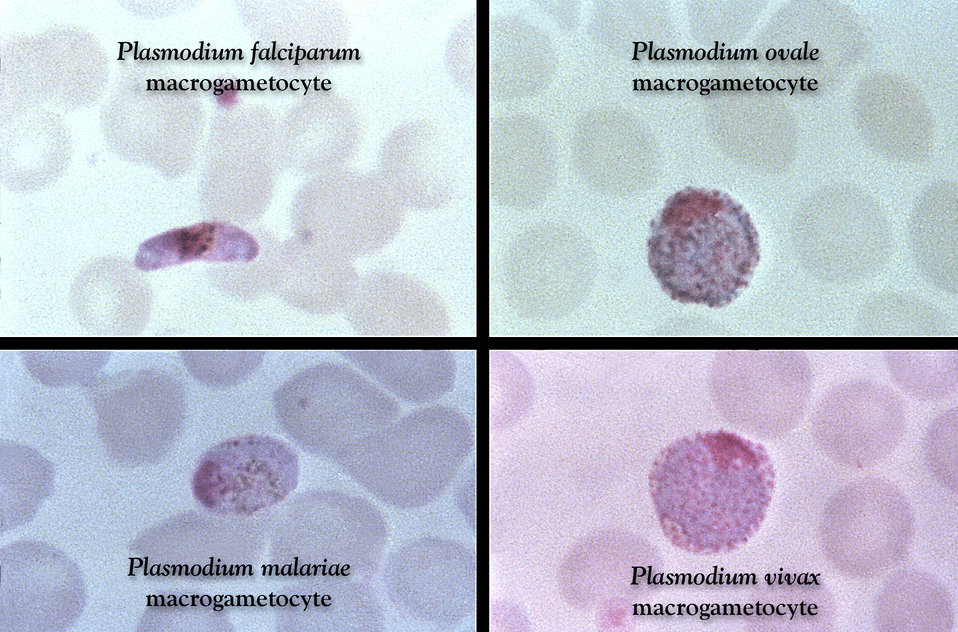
This Giemsa stained slide reveals a P. falciparum, P. ovale, P. malariae, P. vivax, gametocyte.